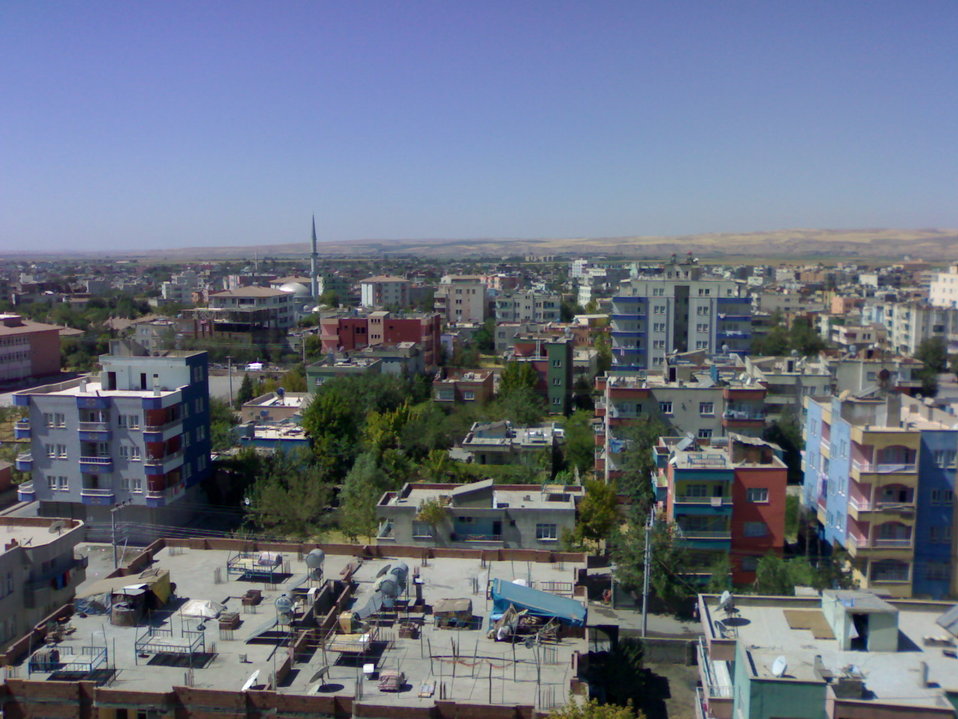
Türkçe: Çekim:Ferhat Fidan Çekim Yeri:Seyrek İş Hanı